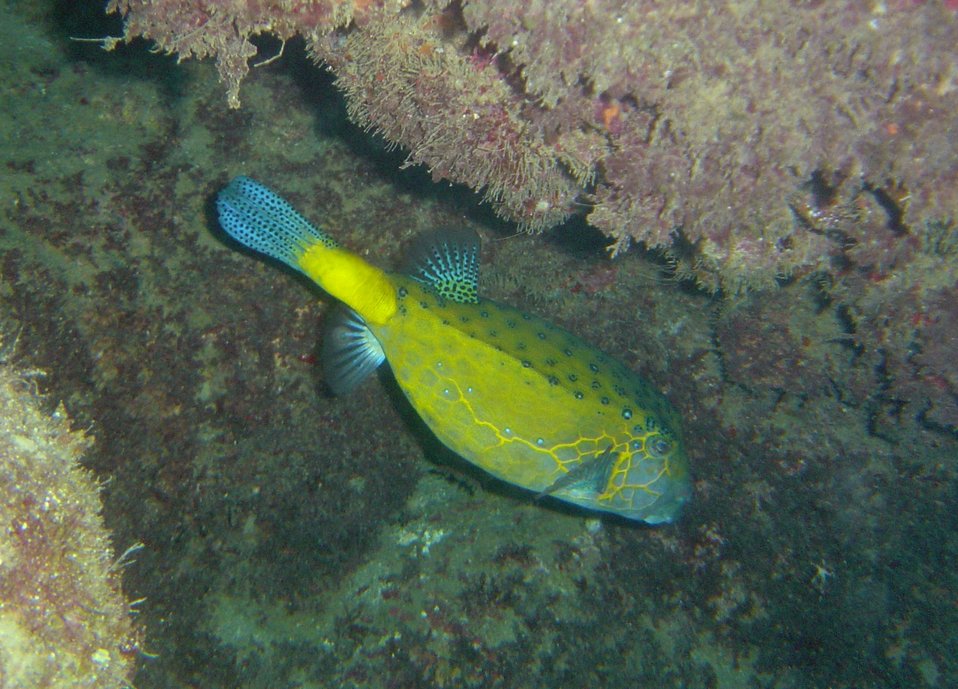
Yellow boxfish (Ostracion cubicus).